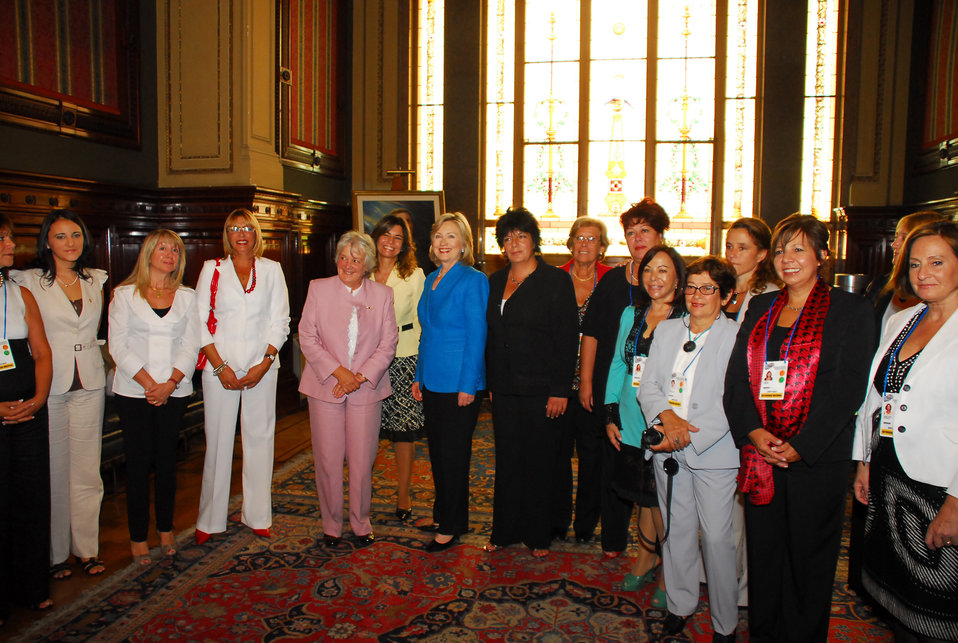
Secretary Clinton Meets With Uruguay Women Legislators

U.S. Secretary of State Hillary Rodham Clinton with Women Legislators after meeting at the Legislative Palace in Montevideo March 1, 2010.